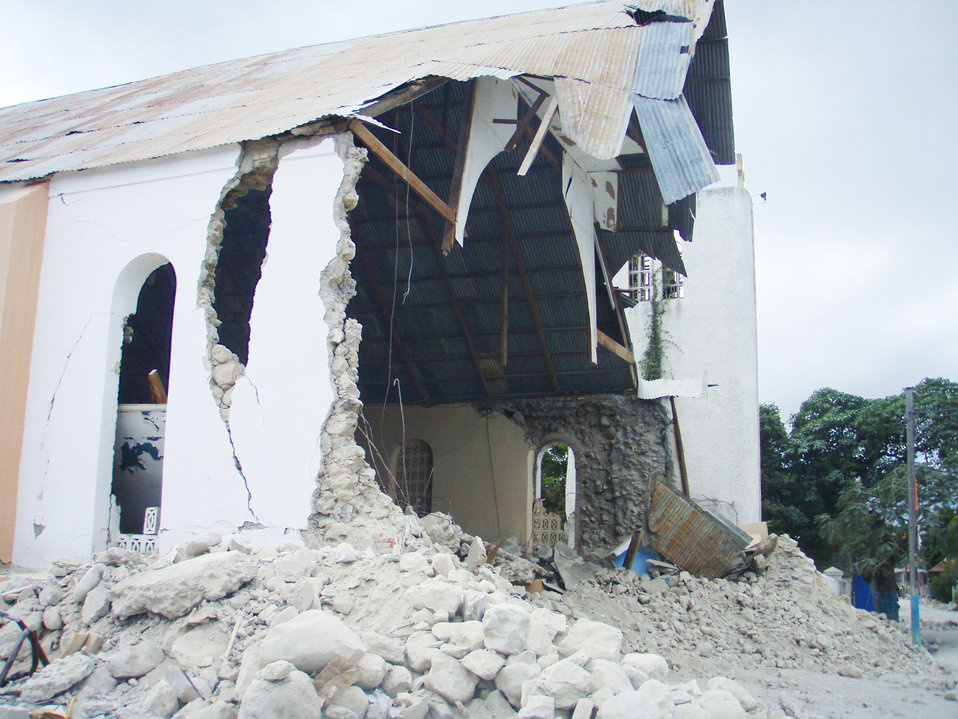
Depicted here, is some of the devastating damage inflicted upon the country of Haiti in the aftermath of the 2010 earthquake. This image was one of many captured by Lt. Cmdr. Gary Brunette, a United States Public Health Service (USPHS) officer, who'd been deployed to this Caribbean region.